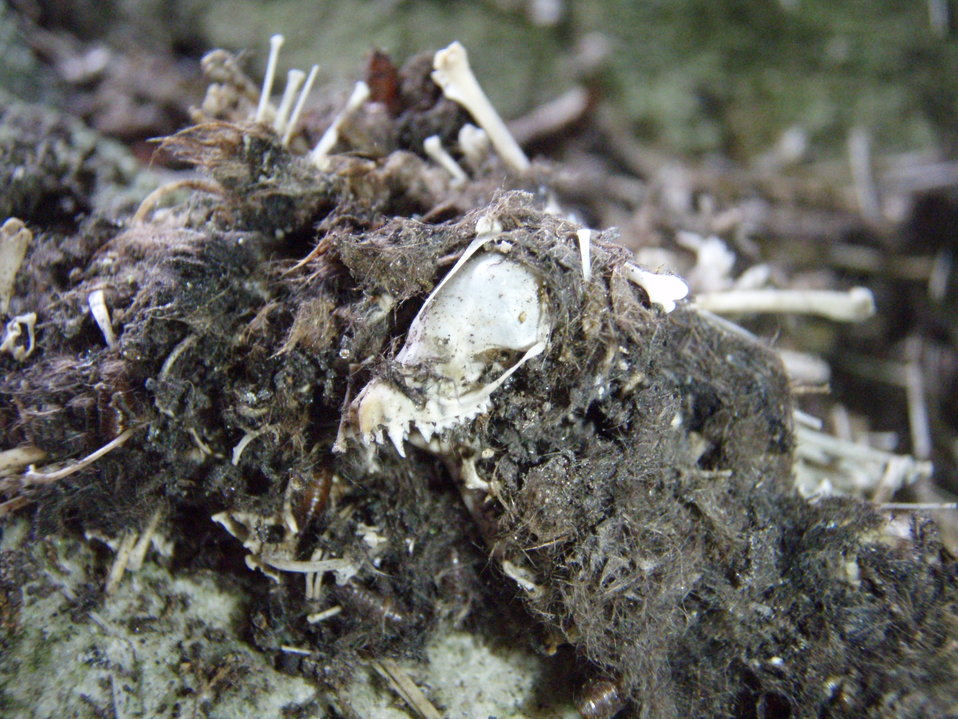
Bat remains

Bat skull and bones, remains litter the floor of Aeolus Cave, a WNS site in Vermont